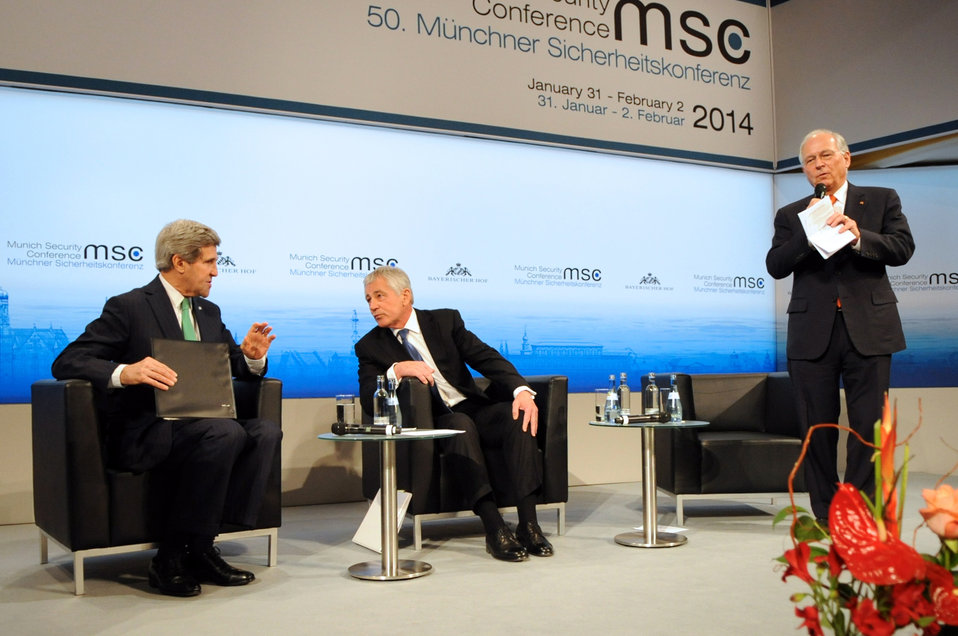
Secretaries Kerry, Hagel Before Joint Panel Discussion at Munich Security Conference

U.S. Secretary of State John Kerry and U.S. Secretary of Defense Chuck Hagel are introduced for a joint panel discussion at the 50th Munich Security Conference in Munich, Germany, on February 1, 2014.